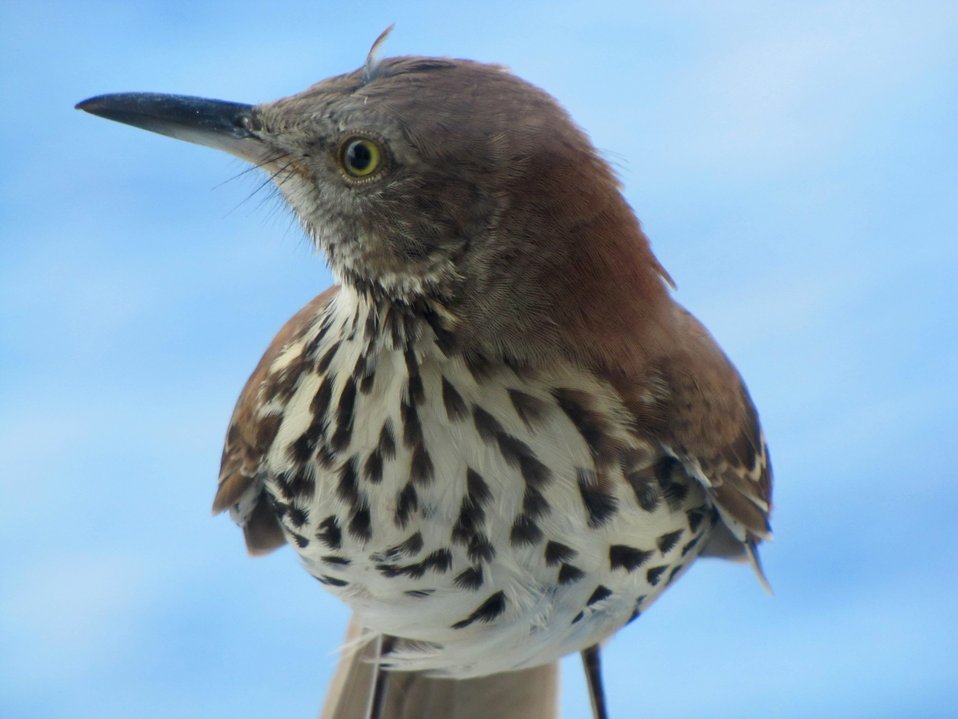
Shore bird landed on NOAA ShipPISCES. Hopefully it found its way back to land safely.